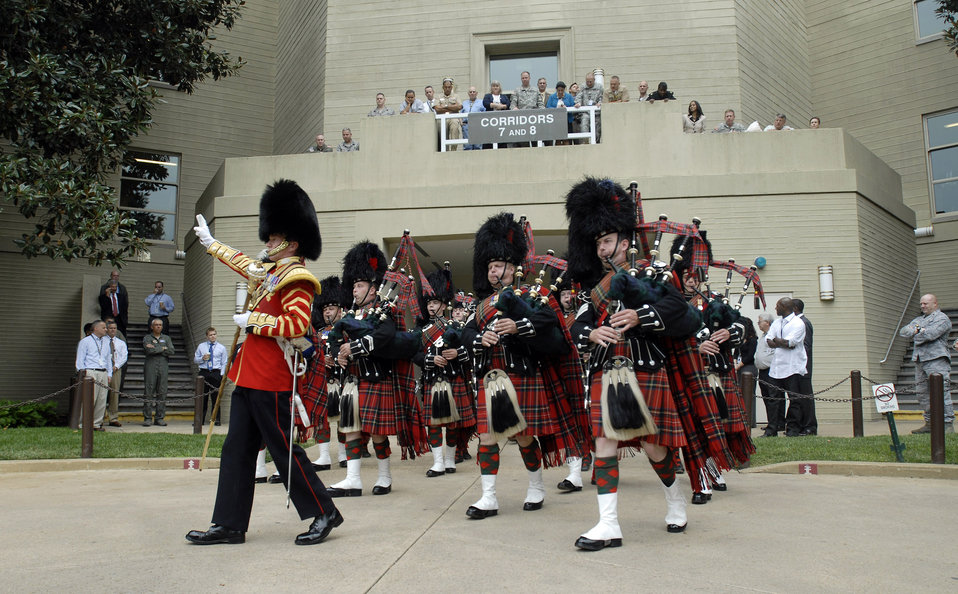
British band performs in Pentagon courtyard

The British Army Pipes and Drums of the 1st Battalion Scots Guard performs for employees, servicemembers and families Sept. 25, 2009, at the Pentagon. The band that consists of infantry soldiers performed for its closet allies prior to a Helmand Province deployment next Spring.